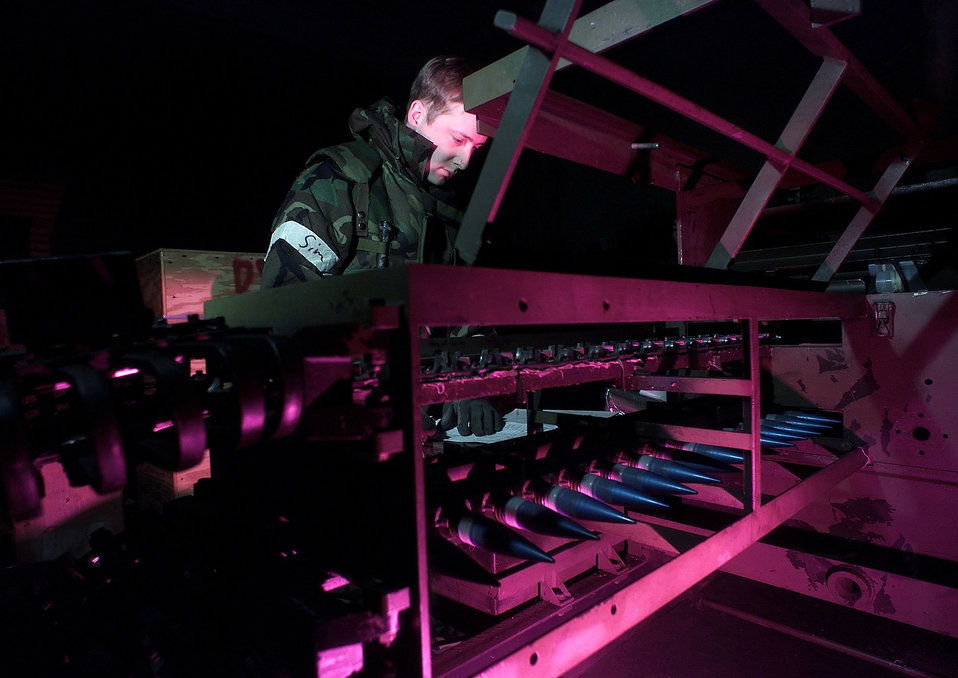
Big bullets

1990's -- OSAN AIR BASE, South Korea -- Senior Airman Charles Hubble, 51st Maintenance Squadron Munitions Flight, inspects 30mm munitions after an A-10 Thunderbolt II sortie during Osan's Initial Response Readiness Exercise/Combat Employment Readiness Exercise.